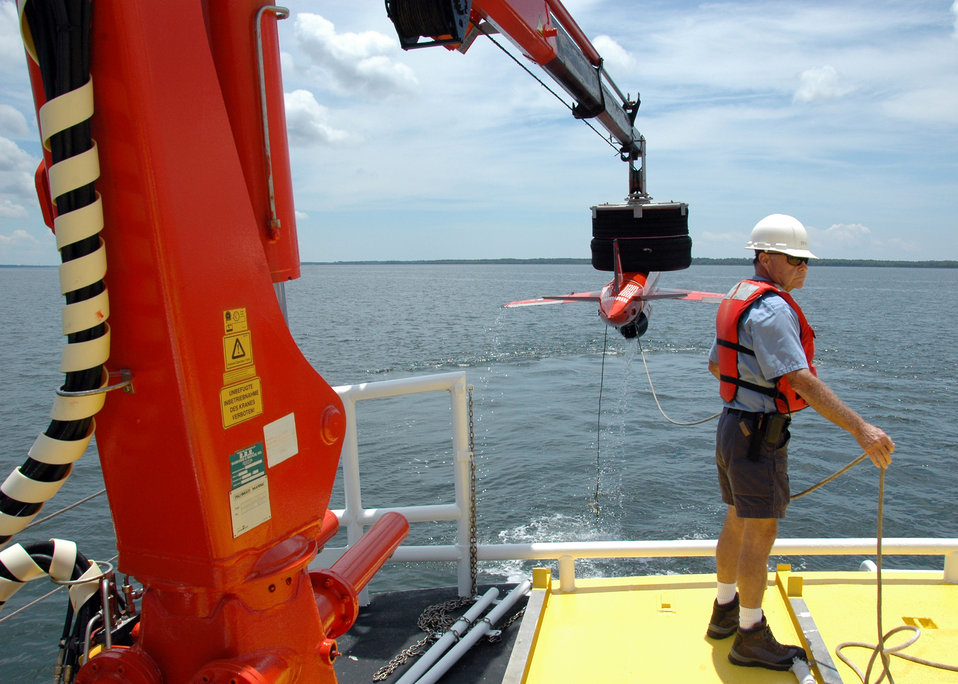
Drone recovery

Byron Howle directs the crane movements to pick up the model BQM-167 sub-scale drone during a recovery demonstration July 22 in the waters off Tyndall Air Force Base, Fla. Mr. Howle is contracted from Florida Offshore through the 82nd Aerial Targets Squadron to help recover sub-scale drones after they are shot down.